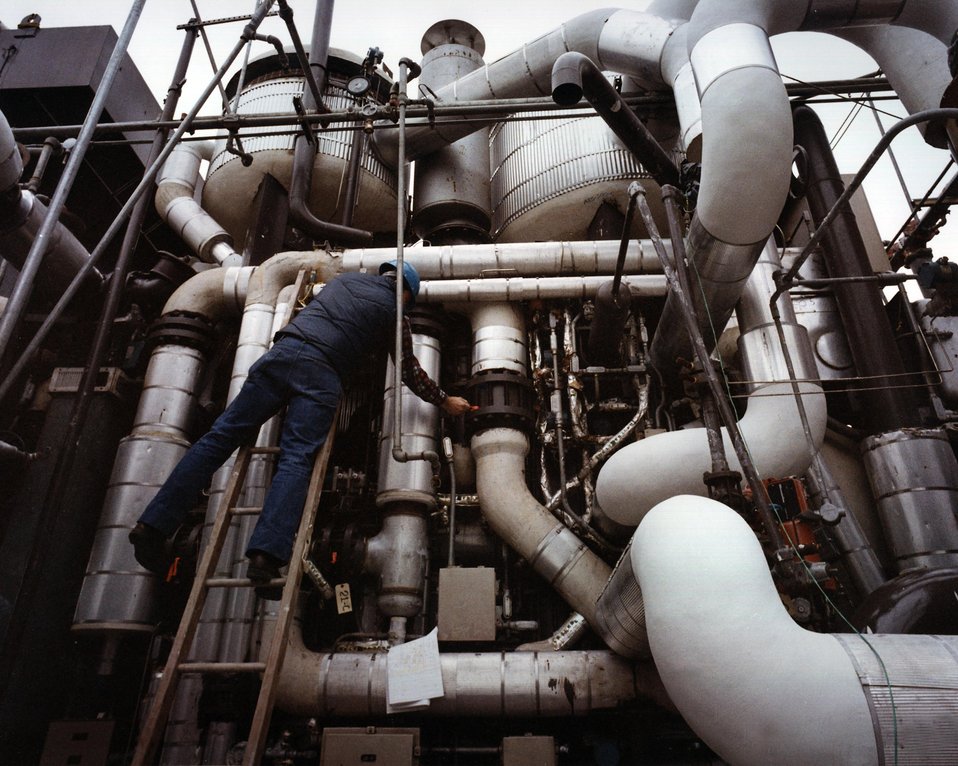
INSTALLATION OF THE FUEL CELL POWER PLANT IN NEW YORK CITY.
THE 4.8-MW FUEL CELL POWER PLANT CONTAINS A FUEL PROCESSOR FOR ENRICHING HYDROCARBON FUEL WITH HYDROGEN, A FUEL CELL POWER SECTION IN WHICH THE PROCESSED FUEL AND AIR REACT TO GENERATE DC POWER, AND AN INVERTER IN WHICH THE DC IS CHANGED TO AC. THIS TYPE OF POWER PLANT IS ESPECIALLY SUITED TO URBAN AND OTHER DENSELY POPULATED AREAS BECAUSE IT IS A MODULAR SYSTEM WHICH IS EASY TO TRANSPORT BY TRUCK AND ASSEMBLE IN A SMALL AREA. OTHER ADVANTAGES ARE ITS ALMOST NOISELESS OPERATION, LACK OF POLLUTION, AND ABILITY TO OPERATE WITHOUT LARGE QUANTITIES OF WATER. THE 4.8-MW FUEL CELL POWER PLANT IS BEING INSTALLED IN NEW YORK CITY AND WILL EVENTUALLY BE INTEGRATED INTO THE CONSOLIDATED EDISON UTILITY NETWORK.